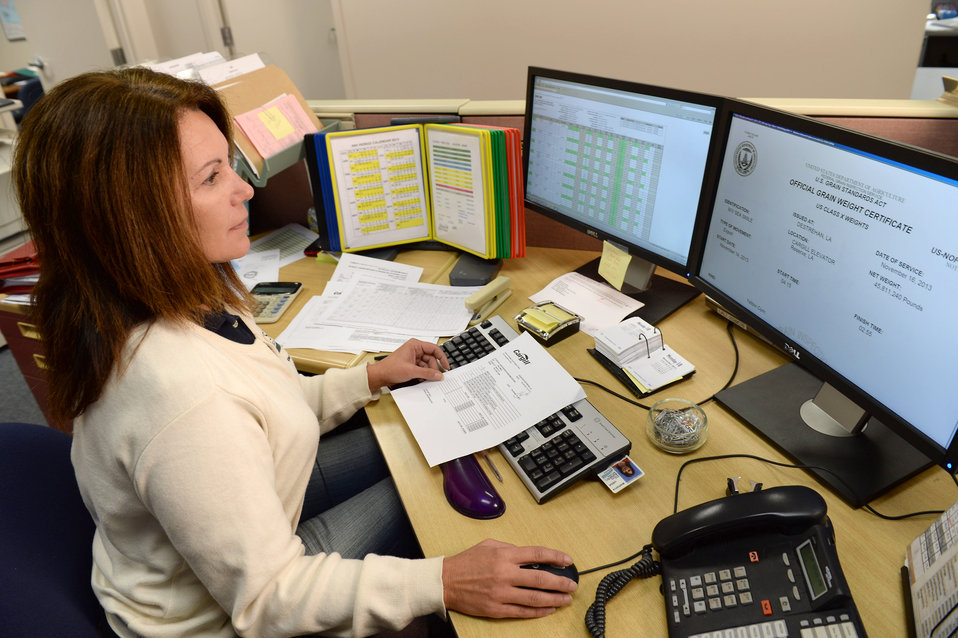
A U.S. Department of Agriculture (USDA) Grain Inspection, Packers and Stockyards Administration (GIPSA) Federal Grain Inspection Service (FGIS) employee processes the grain test results and export clearance forms at the USDA GIPSA FGIS inspection laboratory in New Orleans, LA on Monday, Nov. 18, 2013.